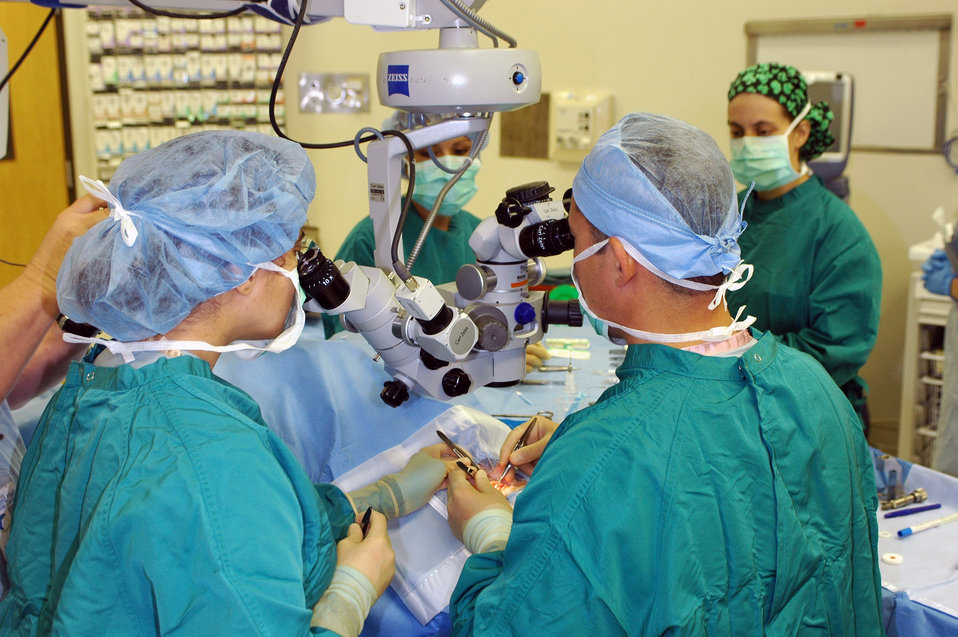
Warrior Care: Air Force doctors return patient's sight

Maj. (Dr.) Vasudha Panday (left) and Lt. Col. (Dr.) Charles Reilly perform an artificial cornea transplant Oct. 20 at Lackland Air Force Base, Texas. Doctors Panday and Reilly are ophthalmologists in the 59th Surgical Specialties Squadron.